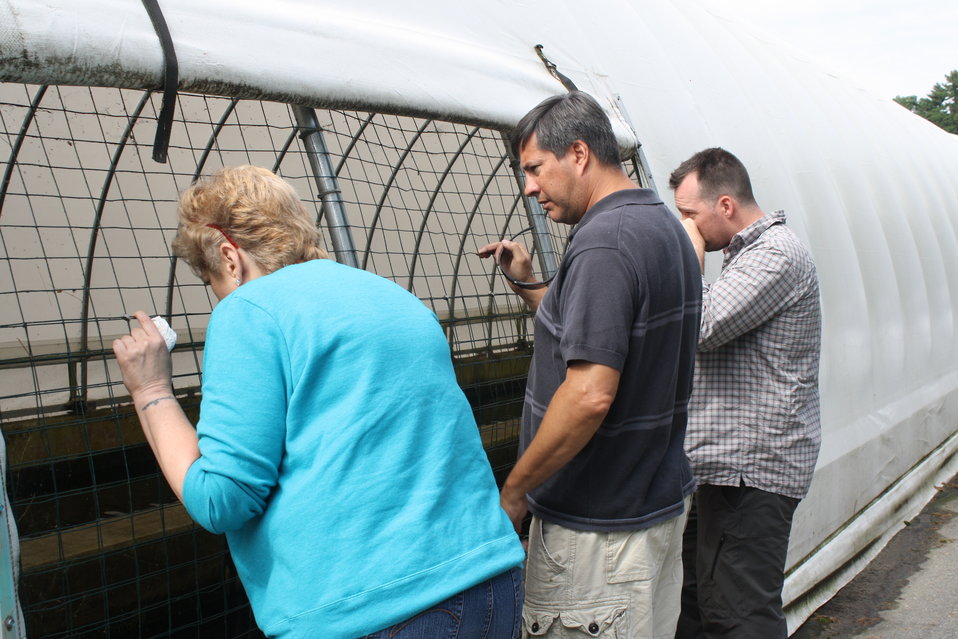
Nashua National Fish Hatchery welcomes regional office employees

Viewing Atlantic salmon in the raceways.